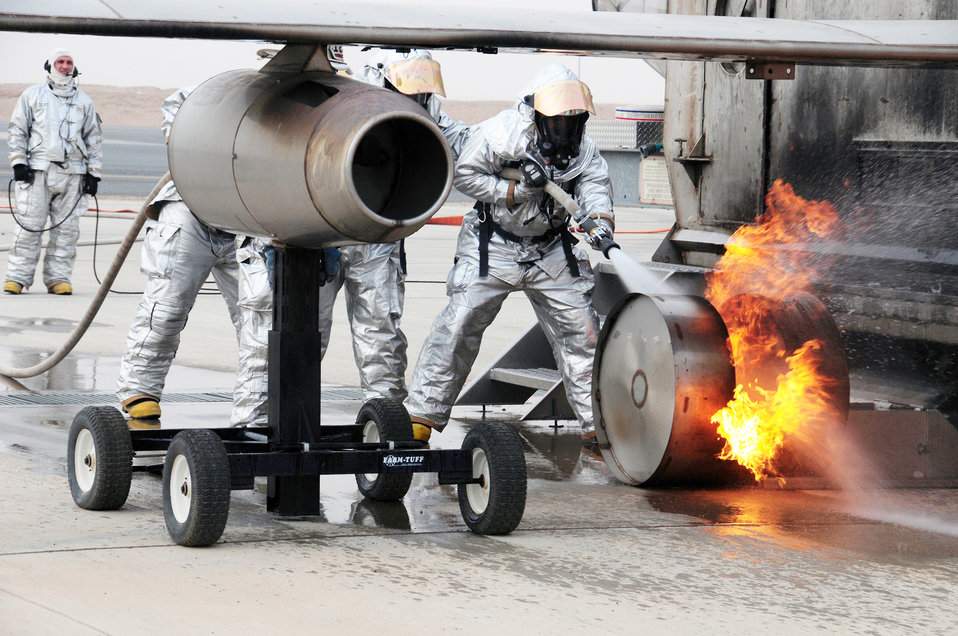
Firefighters test their skills during an annual training

Firefighters practice extinguishing an aircraft fire April 29, 2010, during fire training at an air base in Southwest Asia.